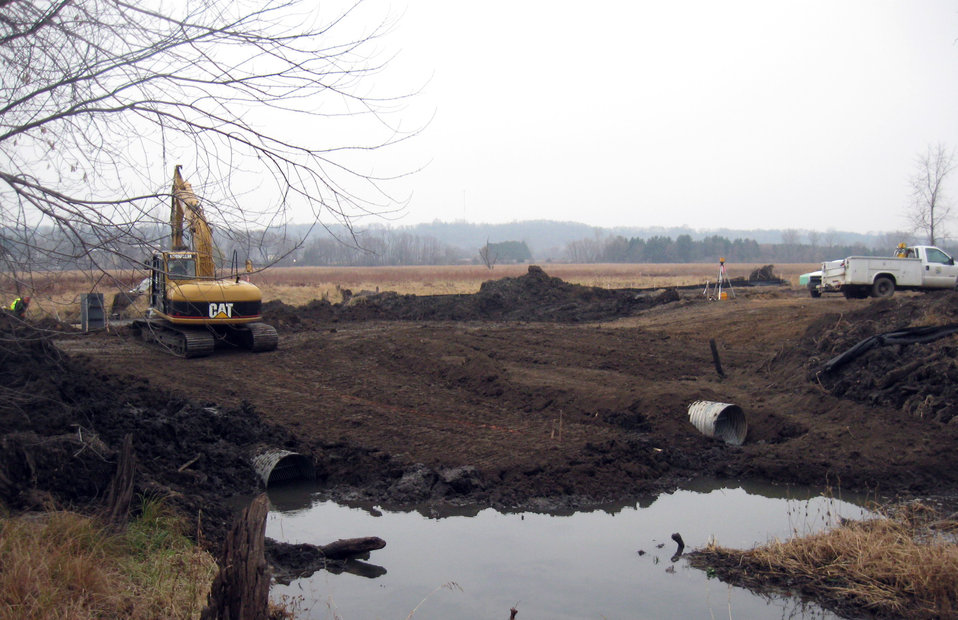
Placing the 36-inch Pipe in Restoration Area

Two 36-inch diameter outlet pipes allow water to pass through under the dike.